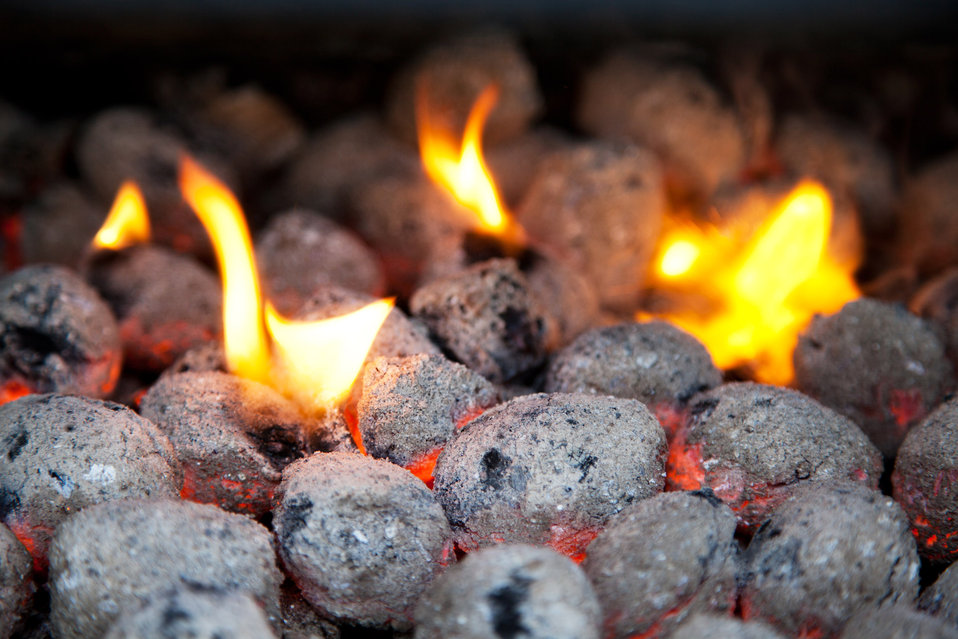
Burning charcoal briquettes

Burning charcoal barbecue briquettes.